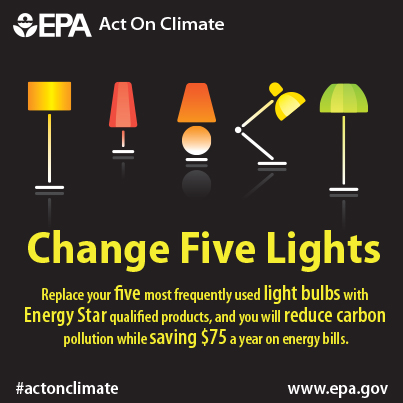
Change Five Lights

Give Energy Star the green light! Switch to Energy Star light bulbs to save $75 yearly and use 75% less energy. #ActOnClimate www.epa.gov/earthday/actonclimate/